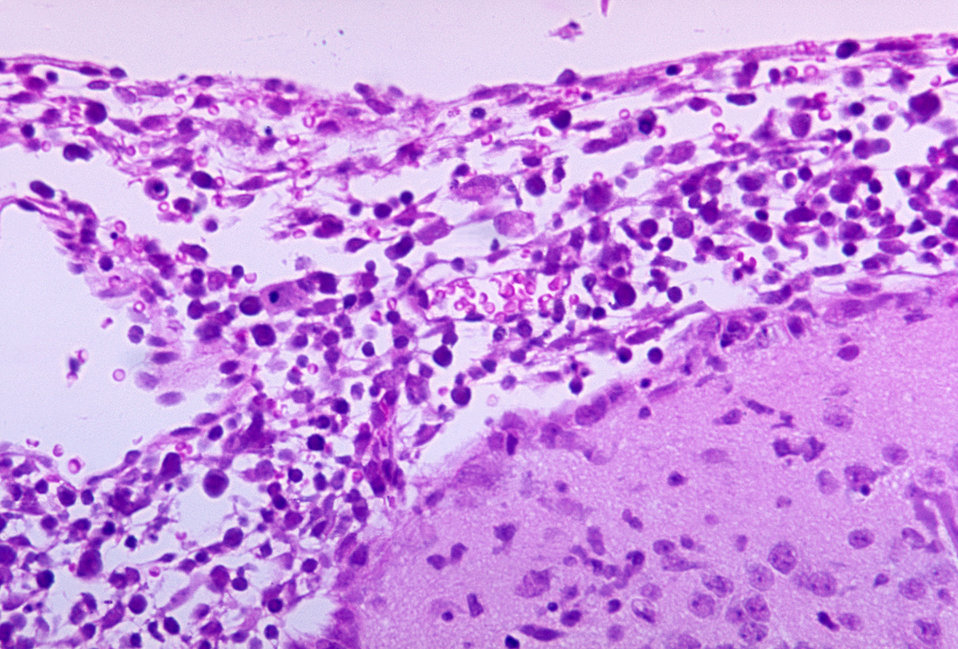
This photomicrograph reveals the histopathologic changes in a case of encephalitis due to the Tamiami virus.